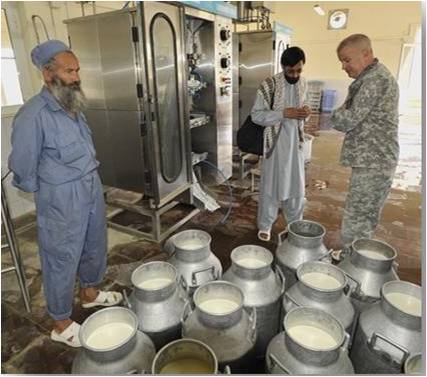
Visiting Some Success Stories